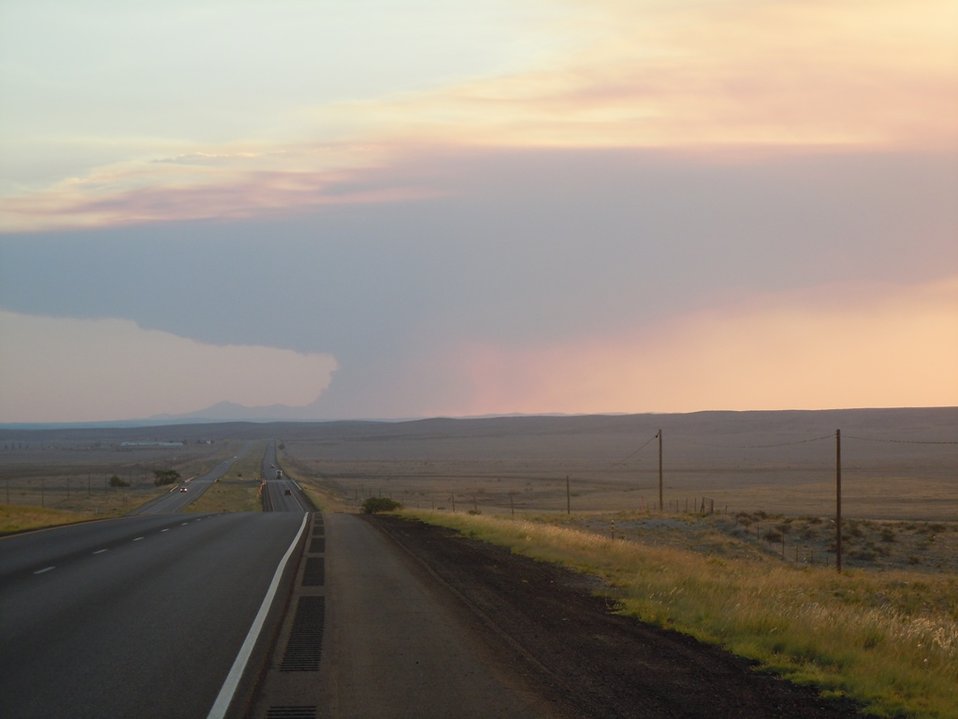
A view of the smoke plumes from the Little Bear Wildfire in the White Mountain Wilderness area of Lincoln National Forest, NM looking west on Roswell Highway on June 8, 2012. The wildfire started on June 4, 2012 from a lightening strike. The steep and rugged terrain of mixed conifers makes fighting the fire difficult. The wildfire is 60% contained with over 42, 995 acres burned as of June 21, 2012.